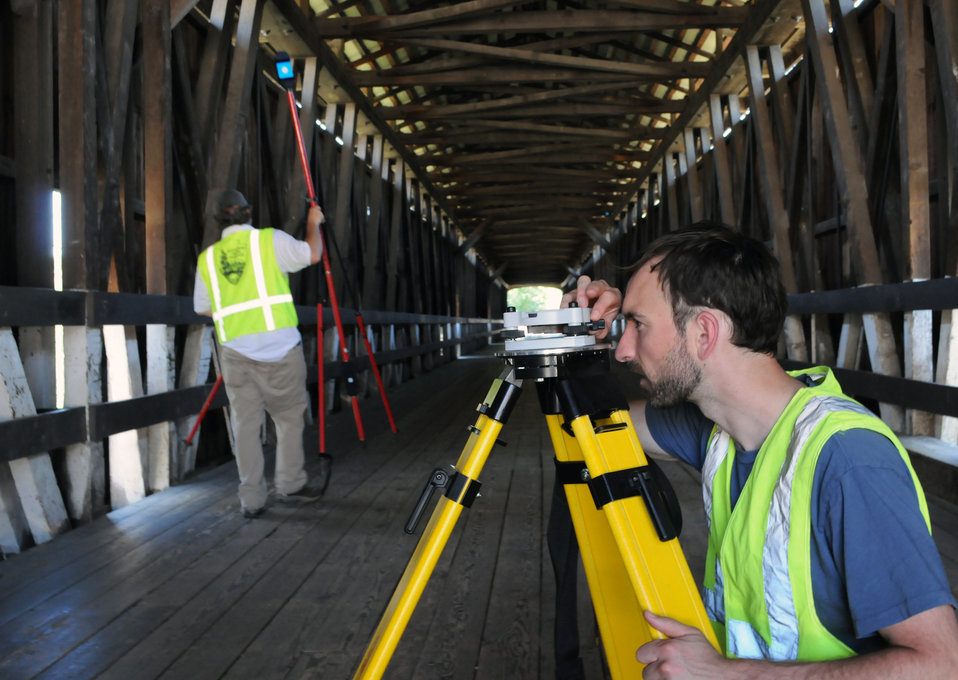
Knights Ferry Covered Bridge gets landmark status

Architect Jeremy Mauro (right) with the Historic American Engineering Record prepares a level while lead architect Christopher Marston adjusts a target in preparation for a laser scan of the Knights Ferry Covered Bridge at the U.S. Army Corps of Engineers Sacramento District’s Stanislaus River Parks near Oakdale, Calif., June 15, 2011. The architects gathered digital data, 360-degree photographs and hand-drawn sketches of the bridge as part of the National Park Service’s submission of the bridge as a historical landmark to the Library of Congress. Landmark status for the bridge is expected to be conferred in November.